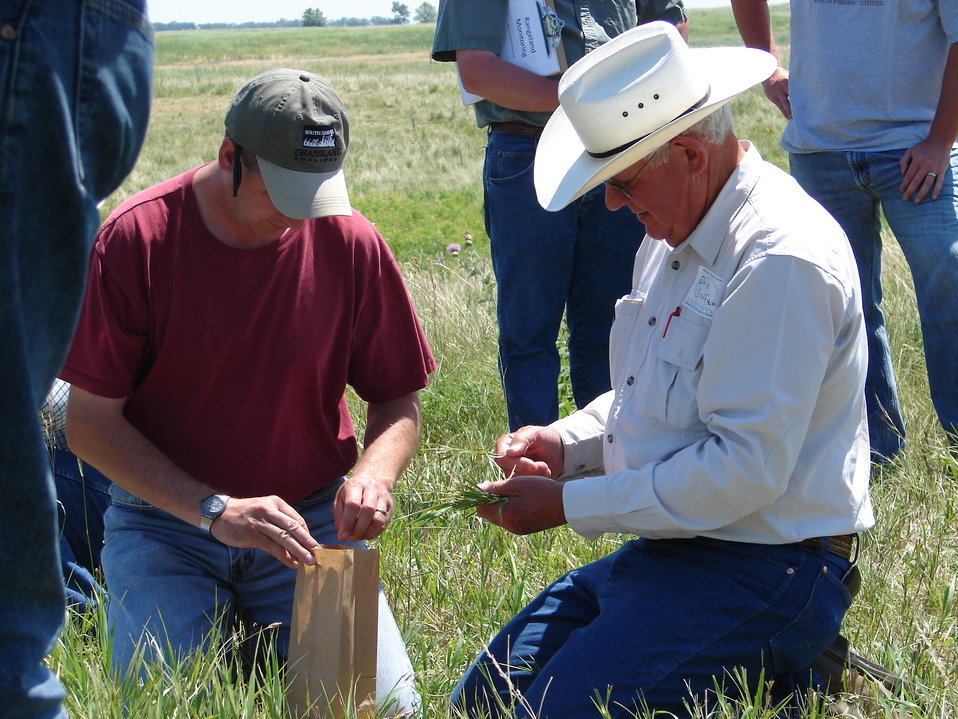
Ranching and Conservation in Harmony

South Dakota PFW assists landowners with projects that benefit Federal Trust Species while also improving their overall ranching and farming operations.